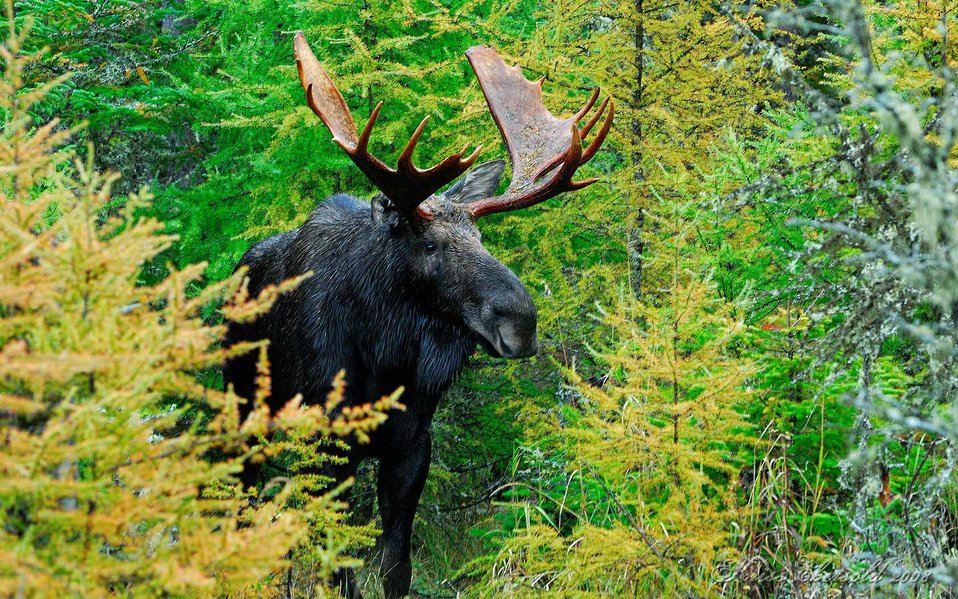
Uploaded by request of W. Kriss Ebersold

Taken in Northeastern New Hampshire

After searching the wilderness of Northwestern Maine on Columbus weekend for a nice bull moose, I spotted this guy off the side of the road in New Hampshire on my way home.